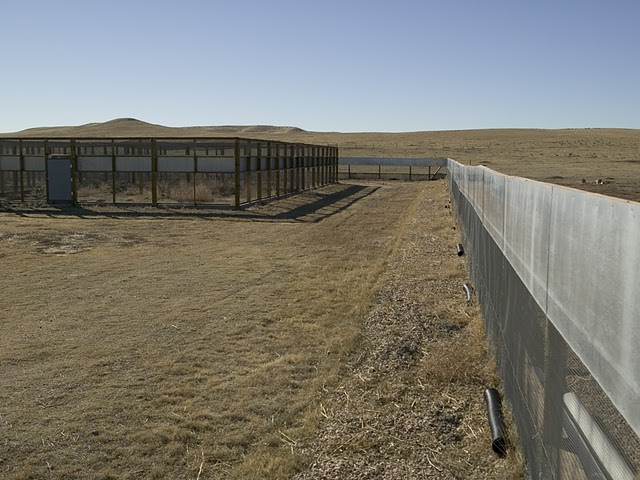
View of Preconditioning Pen

Preconditioning is an important pre-cursor to reintroducing captive bred black-footed ferrets into the wild. Ferrets are placed in outdoor pens for a minimum of 30 days. While in these pens, they are exposed to natural burrow systems and have the opportunity to encounter live prairie dogs. Most preconditioning is conducted at the National Black-footed Ferret Conservation Center in Colorado.